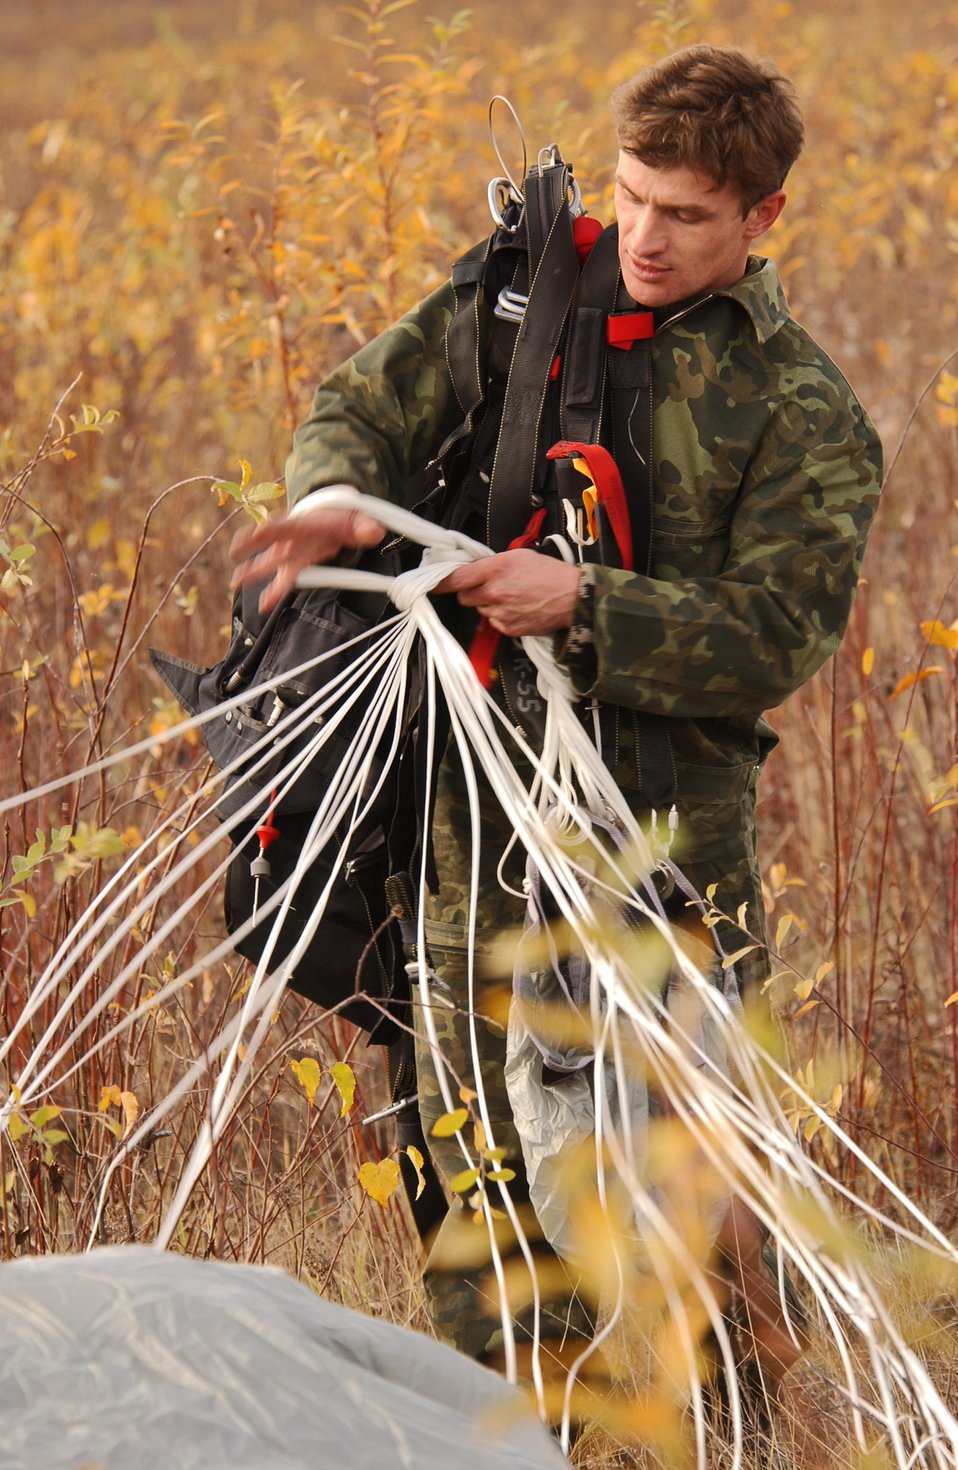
SAREX 05

HUSKY DROP ZONE, Alaska -- A Russian pararescueman recovers his equipment after jumping out of an Alaska Air National Guard HC-130 P/N aircraft with U.S. and Canadian pararescuemen during Arctic Search and Rescue Exercise 05. The exercise aimed to improve interoperability among the three countries.